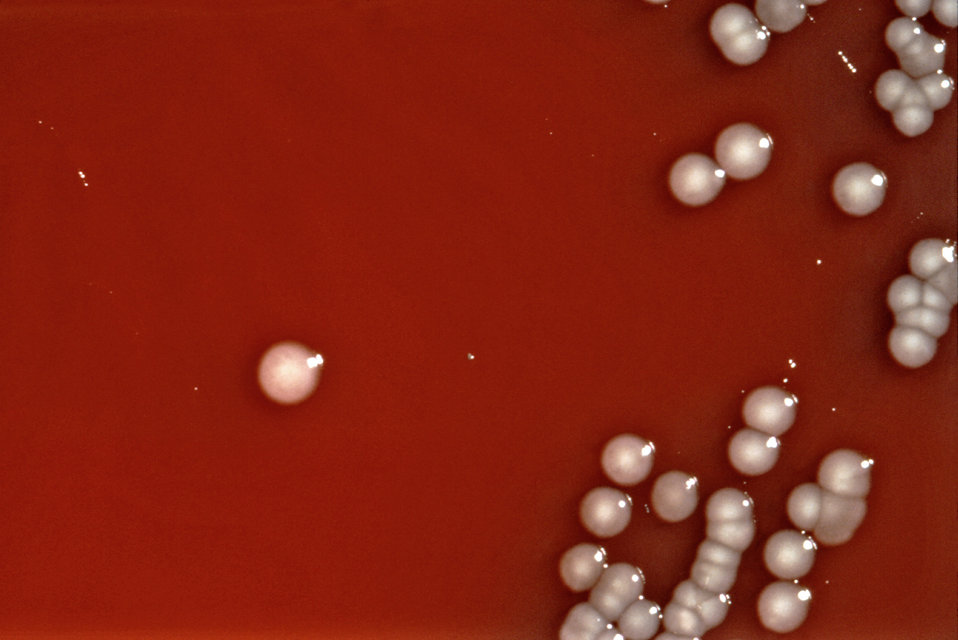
This photograph depicts the colonial growth pattern displayed by Providencia alcalifaciens bacteria cultured on a blood agar plate (BAP).